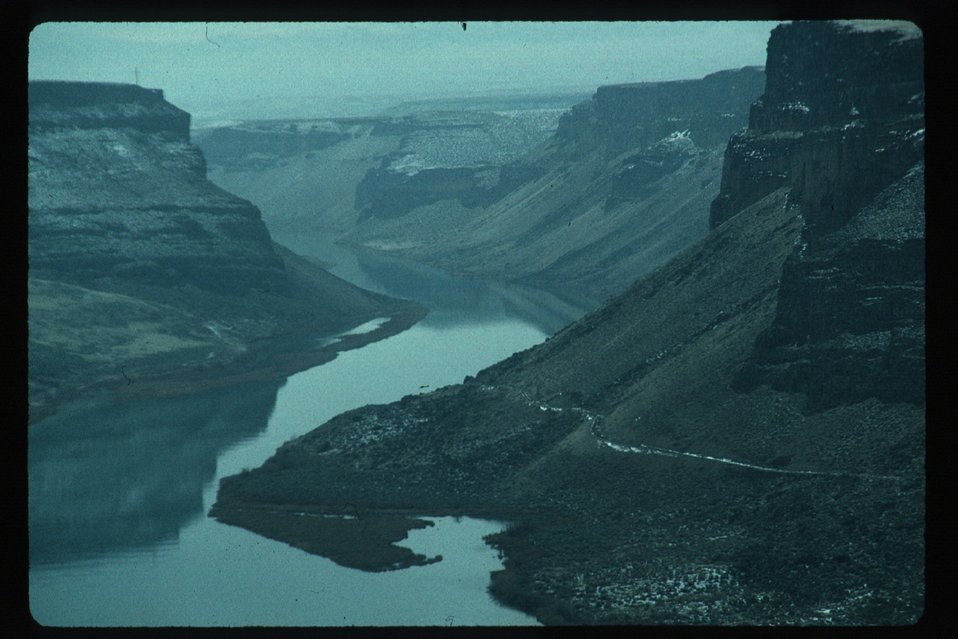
Swan Falls area Snake River Canyon Owyhee Field Office LSRD Lower Snake River District